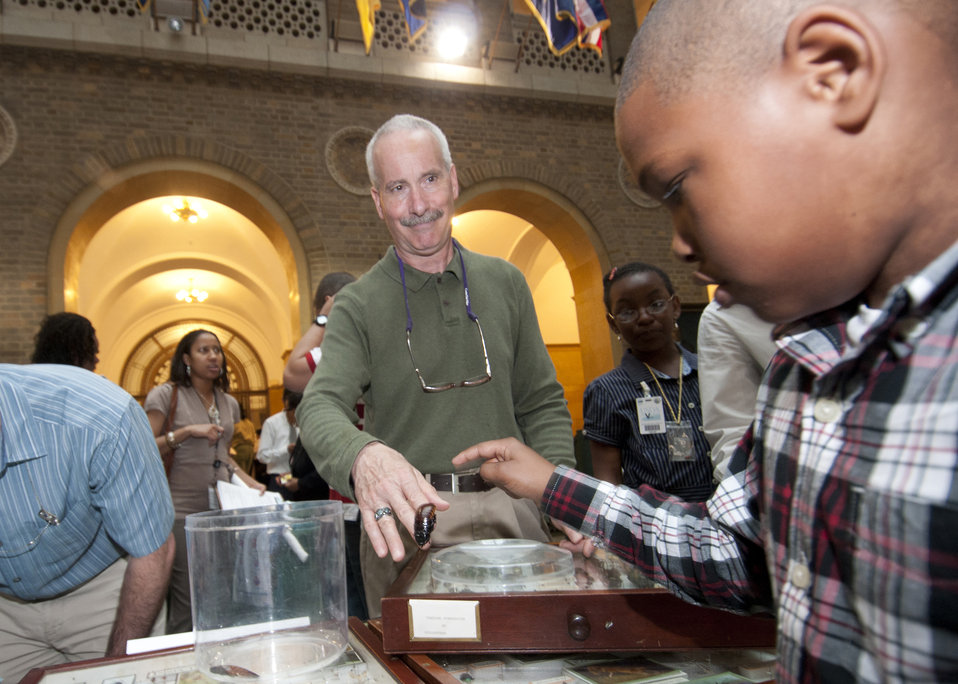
The U. S. Department of Agriculture (USDA) held its annual “Take Your Child to Work Day” on the patio of the Whitten Building, in Washington, DC, on Thursday, April 28, 2011. The program is designed to introduce young people to USDA’s wide range of responsibilities and services. Jacari Phauls tentatively reaches to stroke a Madagascar Hissing Cockroach at the Agricultural Research Service exhibit at Agriculture’s “Take Your Child to Work Day” event.